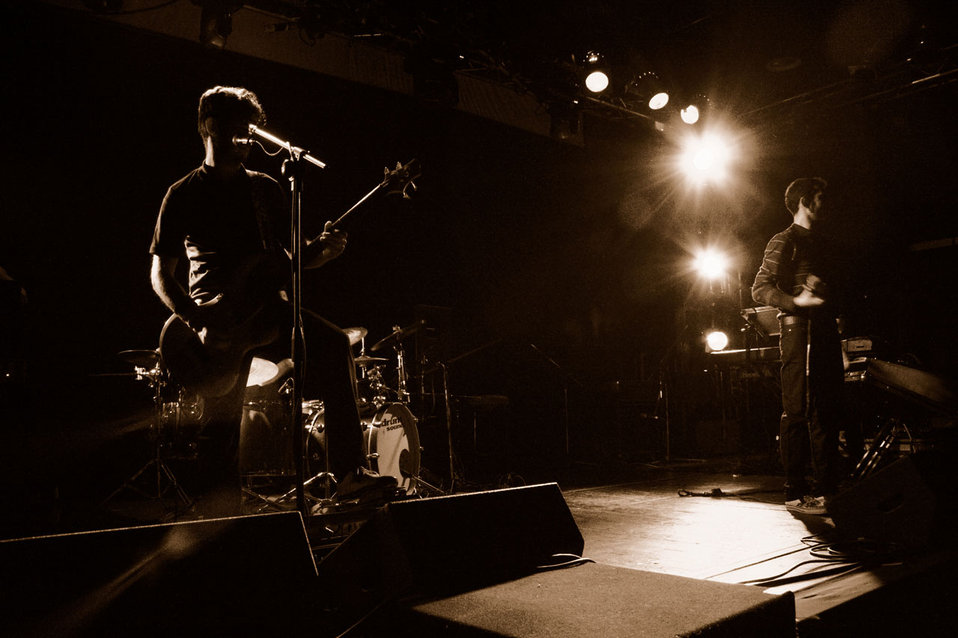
Rock concert silhouette of guitar player.